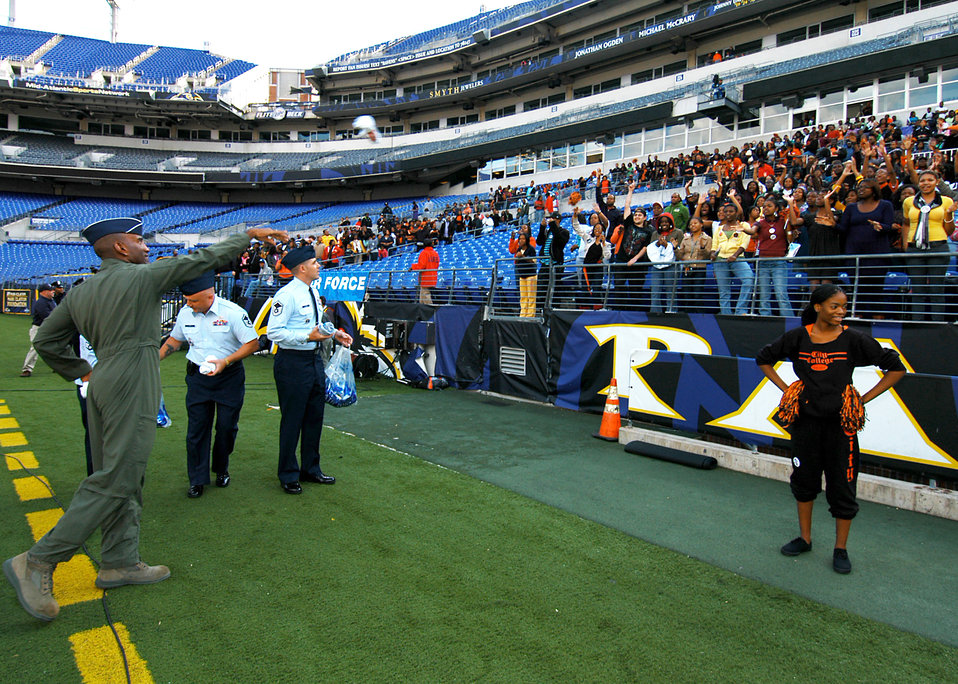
General shares game plan for success

Brig. Gen. Alfred J. Stewart, Tech. Sgt. Stephen Sutton and Master Sgt. Christopher Claar toss free Air Force T-shirts to Baltimore City College High School football fans Nov. 8 at M&T Bank Stadium in Baltimore. A Class of 1977 Baltimore Polytechnic Institute High School alumni, General Stewart shared inspirational words with both teams before the game and he presented a $500 college scholarship to a member of both high schools. General Stewart is the Air Force Recruiting Service commander. Sergeants Sutton and Claar are assigned to the 317th Recruiting Squadron.